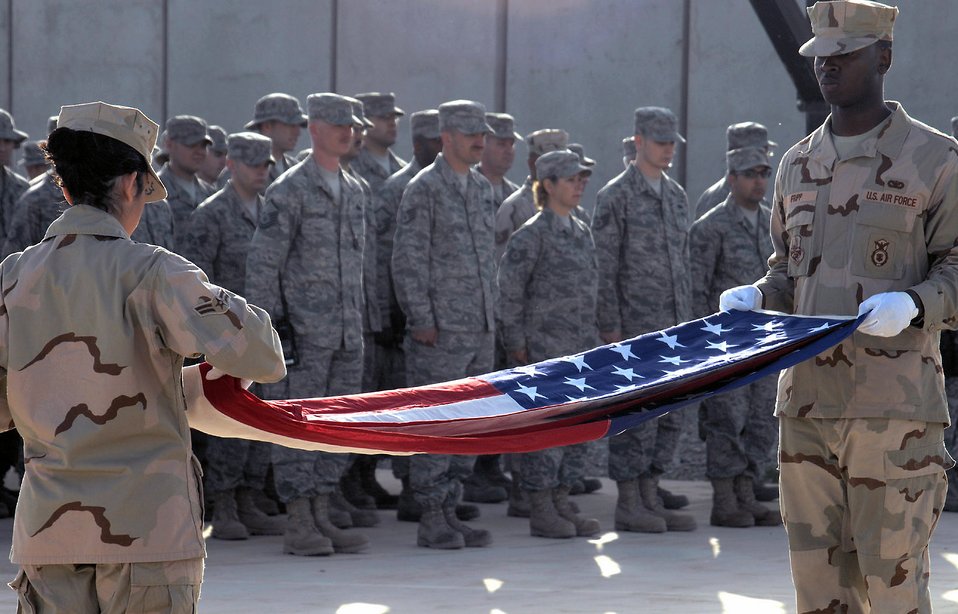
Kirkuk Airmen commemorate 5-year OIF anniversary

Airman 1st Class Frances Anderson and Senior Airman Terryl Fripp perform a flag-folding ceremony during an Operation Iraqi Freedom Anniversary Commemoration March 20 at Kirkuk Air Base, Iraq. The ceremony focused on the sacrifices of the 42 Airmen who gave their lives supporting the war in Iraq.